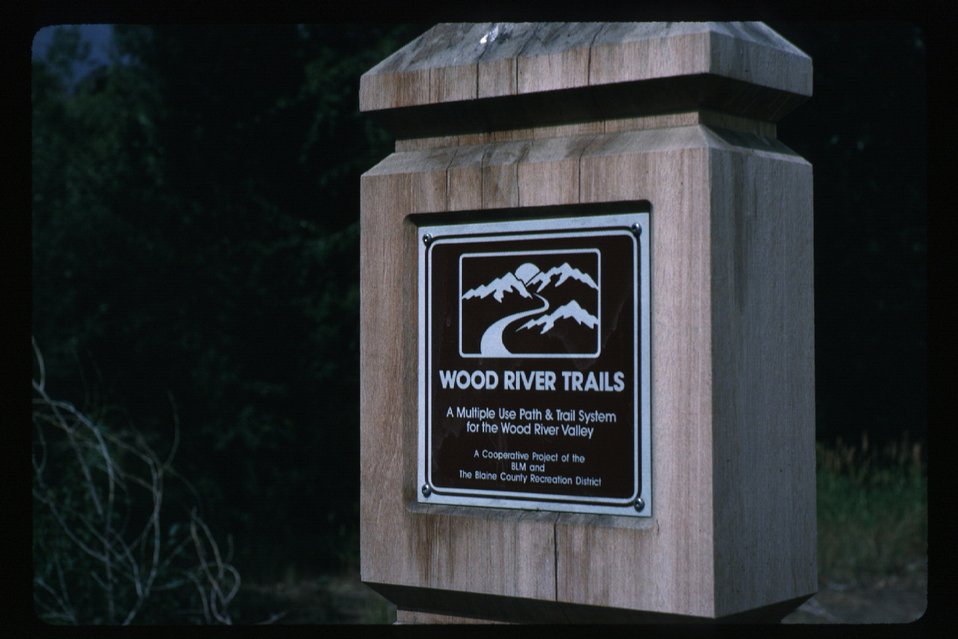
Sun Valley Recreation Scenic Biker Shoshone Field Office USRD Upper Snake River District